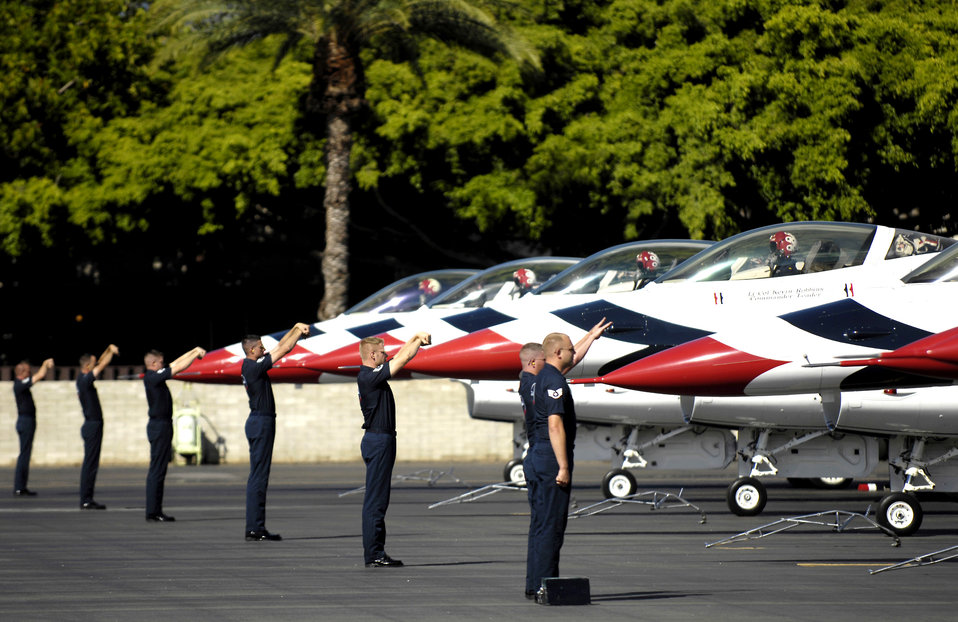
Thunderbirds arrive for Air Force Week Honolulu

Thunderbird maintainers marshal F-16 Fighting Falcons to parking spots during an arrival ceremony Sept. 12 at Hickam Air Force Base, Hawaii. The Thunderbirds, the U.S. Air Force Air Demonstration Squadron, are performing as part of Air Force Week Honolulu, which runs Sept. 8 through 15.